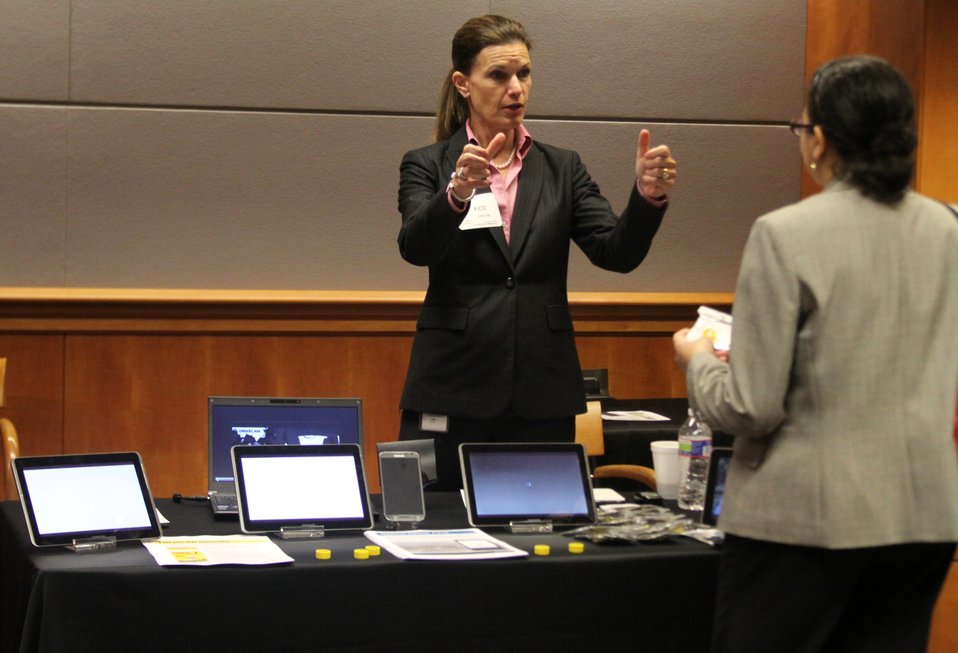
Distracted Driving Technology Showcase April 19, 2013